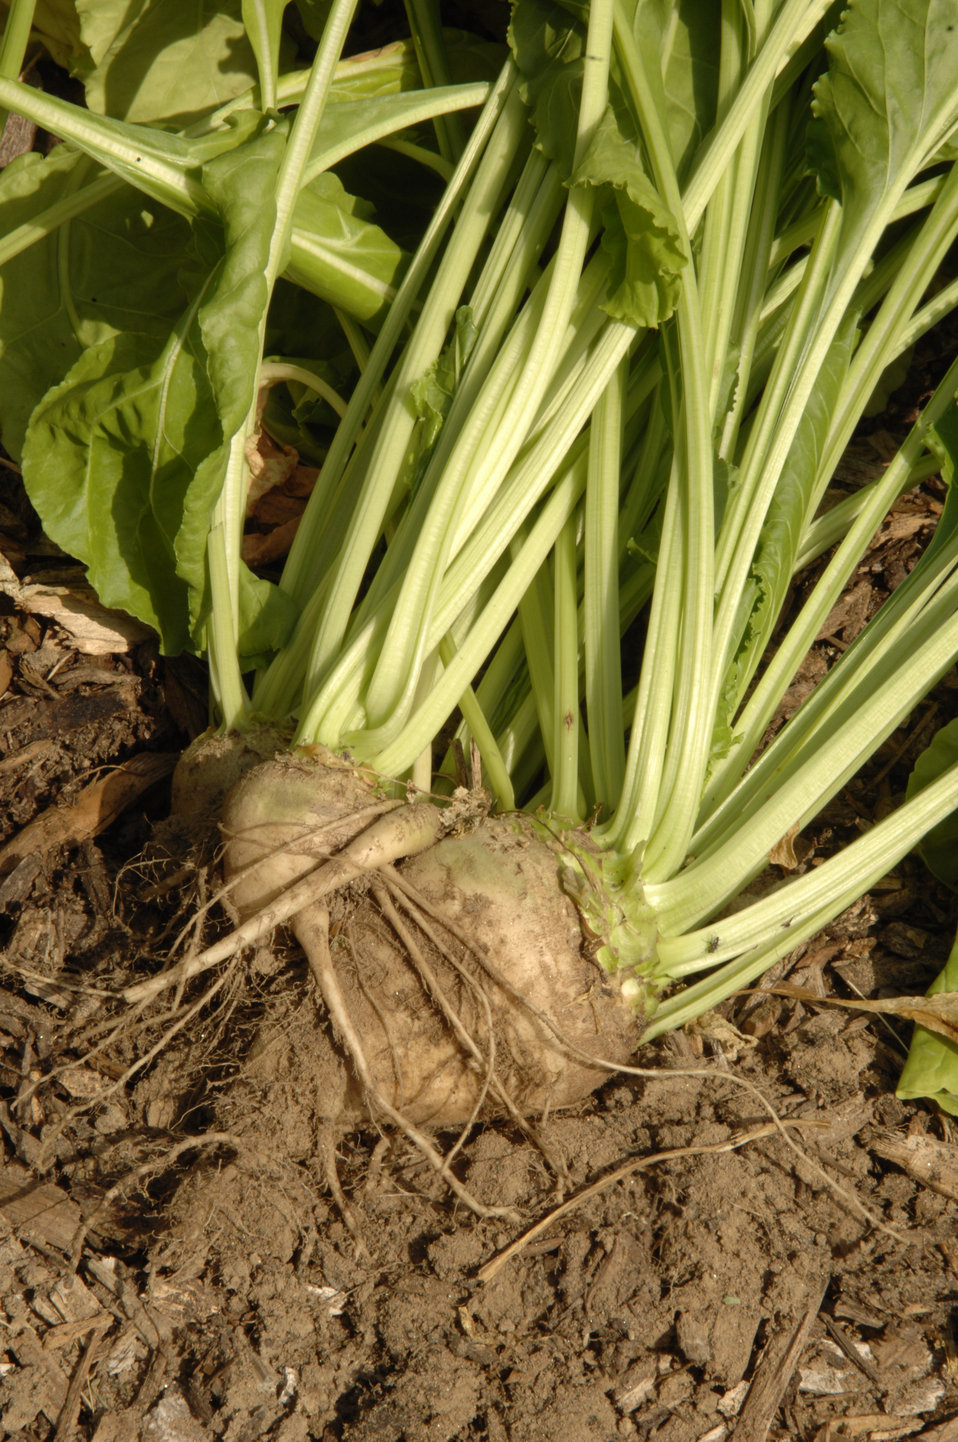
The Power Plant garden at the National Arboretum in Washington, D.C., displays a variety of plants that may provide a valuable and renewable source of bioenergy for America. Bioenergy is a renewable energy made available from materials derived from biological sources. Sugar beet is a root vegetable native to the Atlantic islands, North Africa, southwestern Asia and Europe and could be important in the production of sugar ethanol. Sugar beet is already grown in 11 U.S. states and tests have shown that a ton of sugar beet could yield more ethanol than a ton of sugarcane. The byproducts of sugar beet processing include molasses and beet pulp, which can be used for livestock feed. This photograph shows sugar beet growing in the Power Plant garden at the National Arboretum in Washington, D.C. on August 19, 2008.